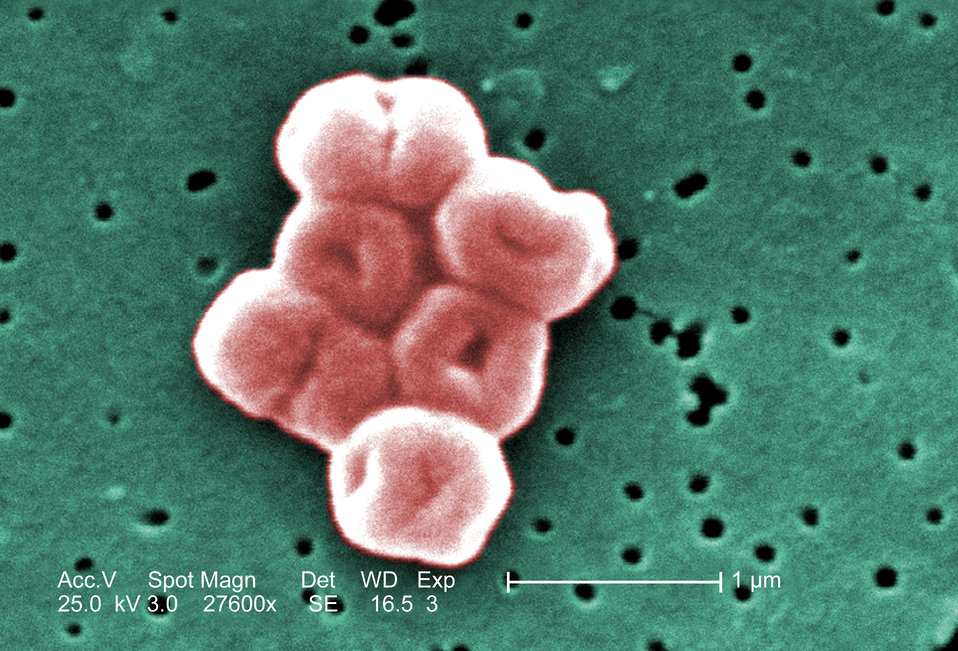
This SEM depicts a highly magnified cluster of Gram-negative, non-motile Acinetobacter baumannii bacteria; Mag - 27600x. See PHIL 6497 for a black and white version of this image.